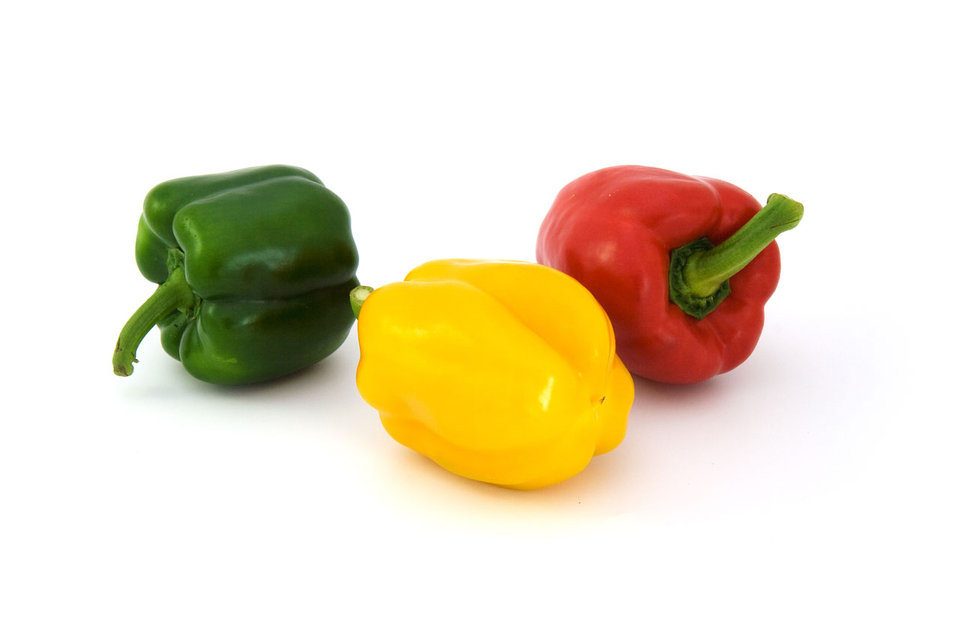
Three peppers

Three colourful peppers.